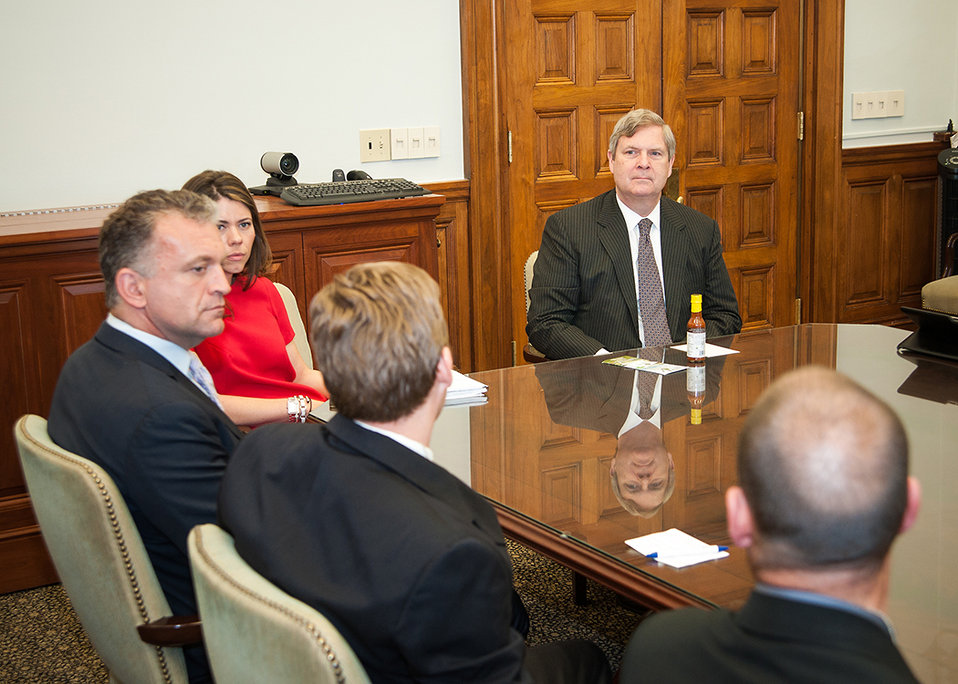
U.S. Marine Corps (USMC) veteran Mike Hanes describes the education and assistance he received from Archi’s Acres and Veteran’s Sustainable Agriculture Training (VSAT) to start his business producing Forager Mike’s Superfoods Dang Hot Sauce while visiting Agriculture Secretary Tom Vilsack at the U.S. Department of Agriculture (USDA) in Washington, D.C. on Tuesday, Apr. 3, 2013. Archie’s Acres in association with a local university offers the Veteran’s Sustainable Agriculture Training (VSAT) program to active-duty military, veterans and anyone interested in sustainable agriculture as a career. (From right Archie’s Acres and Veteran’s Sustainable Agriculture Training (VSAT) Eric Boyd, Archie’s Acres and Veteran’s Sustainable Agriculture Training (VSAT) graduate Forager Mike’s Superfoods Dang Hot Sauce Mike Hanes, Archie’s Acres Veteran’s Sustainable Agriculture Training (VSAT) Dylan Ratigan, USDA Deputy Chief of Staff Anne MacMillan, and Agriculture Secretary Tom Vilsack).